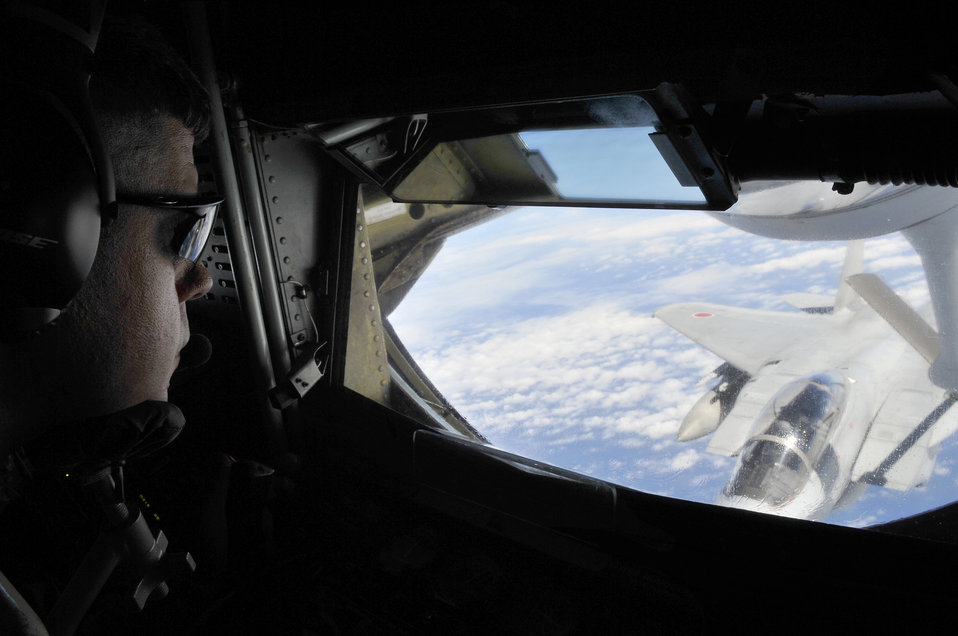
Airmen prepare JASDF pilots

Senior Master Sgt. Michael Steinkraus steers the refueling boom in the back of a KC-135 Stratotanker off loading fuel to a Japan Air Self Defense Force F-15 Eagle during bilateral air refueling training May 17, 2010, at Kadena Air Base, Japan. Sergeant Steinkraus is a boom operator with the 909th Air Refueling Squadron.